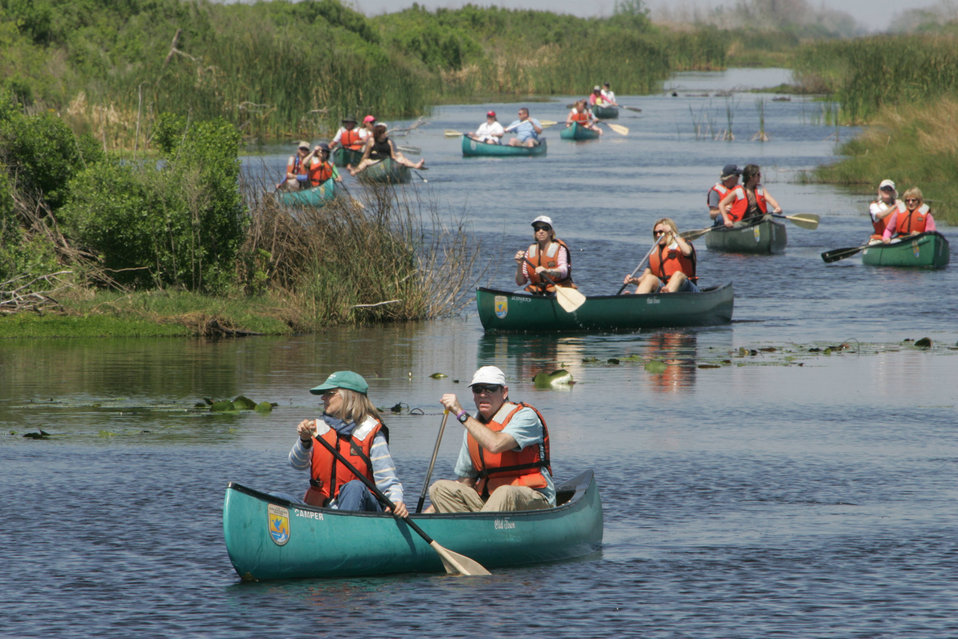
Touring by canoe

Photo credit: USFWS/Steve Hillebrand

Species and ecosystems provide a wide range of important products and services to the nation, including jobs, food, clean water, protection from storms, recreation, and cultural heritage